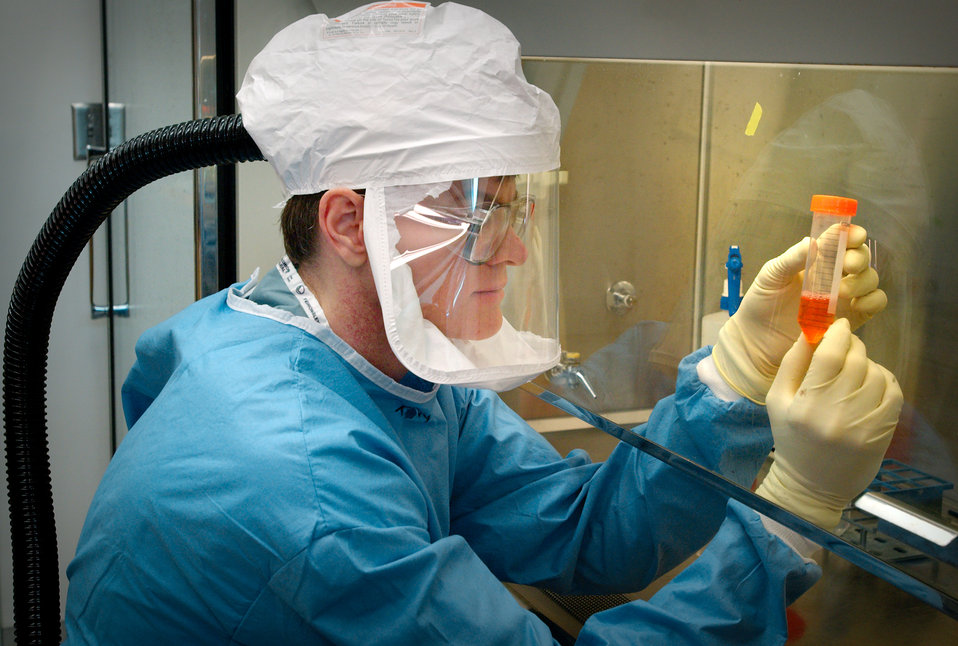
This 2005 photograph depicts one of the Centers for Disease Control's (CDC) staff microbiologists using an electronic pipetter to extract reconstructed 1918 Pandemic Influenza Virus from a calibrated vial containing a supernatant culture medium. The image was captured in a Biosafety Level 3-enhanced laboratory setting, where this scientist was working beneath a flow hood, whereupon, air outside the hood is pulled into the hood's confines and is then filtered of any pathogens before being re-circulated inside the self-contained laboratory atmosphere.